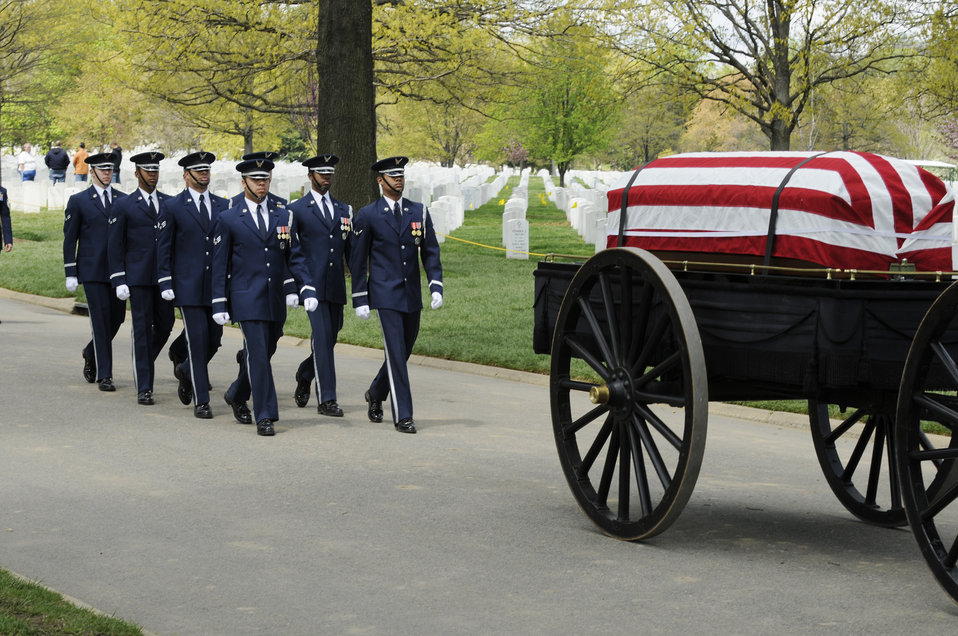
The last to let you down

A United States Air Force Honor Guard body bearer team marches behind a caisson during a full-honors funeral ceremony at Arlington National Cemetery. Honor Guard body bearers train constantly to maintain the precision they are known for. Their standards of flawlessness are set out of necessity to honor fallen Airmen.